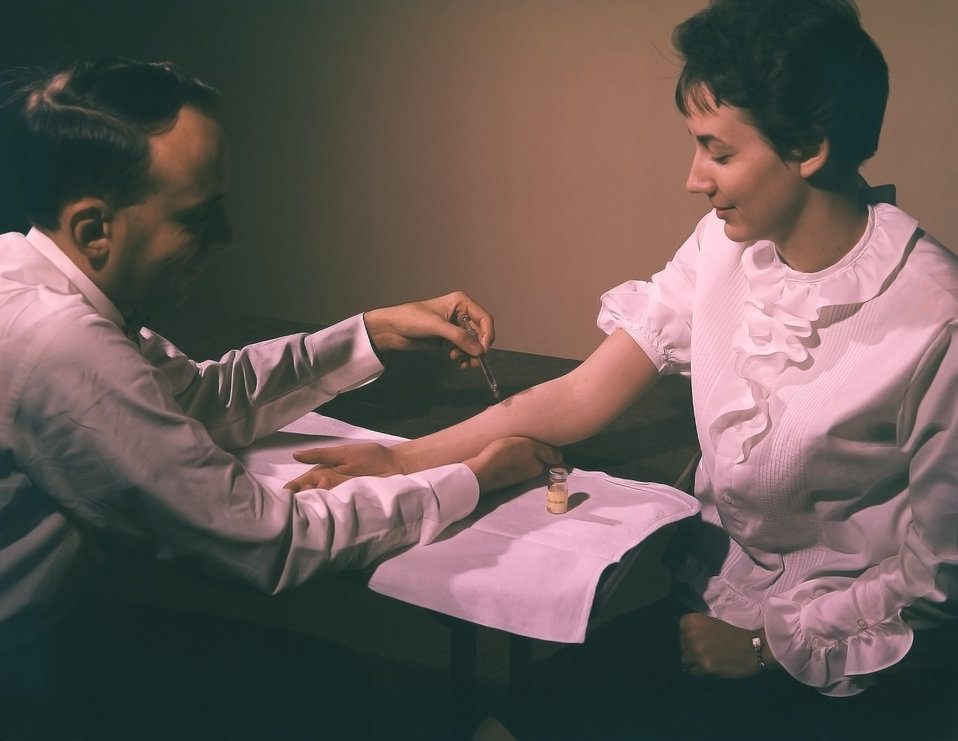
This 1962 photograph depicted a physician is in the process of administering a Mantoux tuberculin skin test (TST) in this recipient's right forearm, which will cause a 6mm to10mm wheal, i.e., a raised area of skin surface, to form at the injection site.